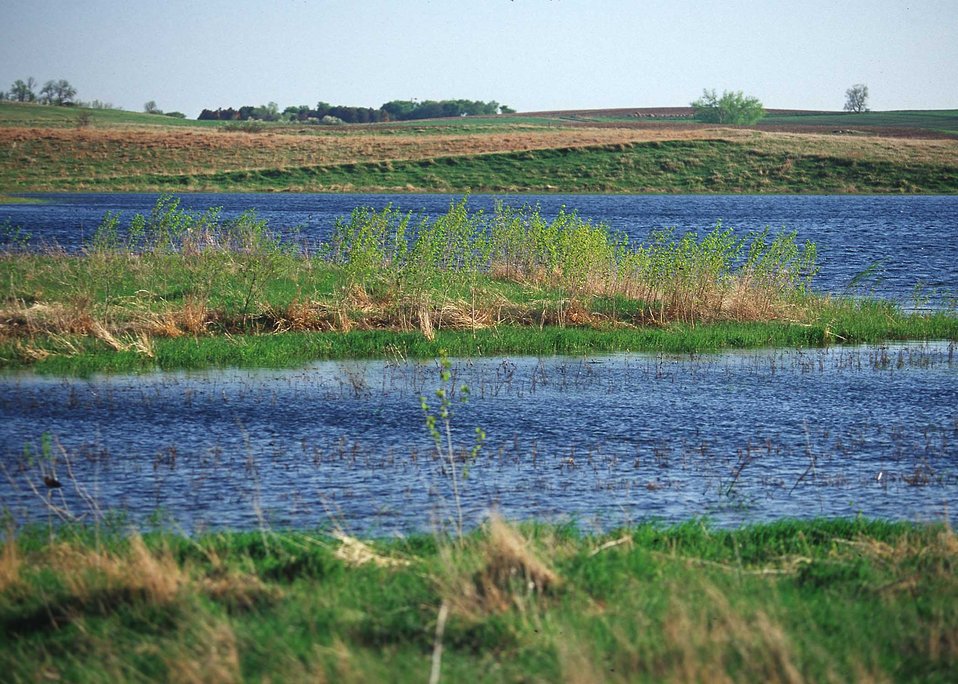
Wetlands recharge groundwater, store floodwaters, provide a filter for sediment and chemicals as well as provide wildlife habitat.